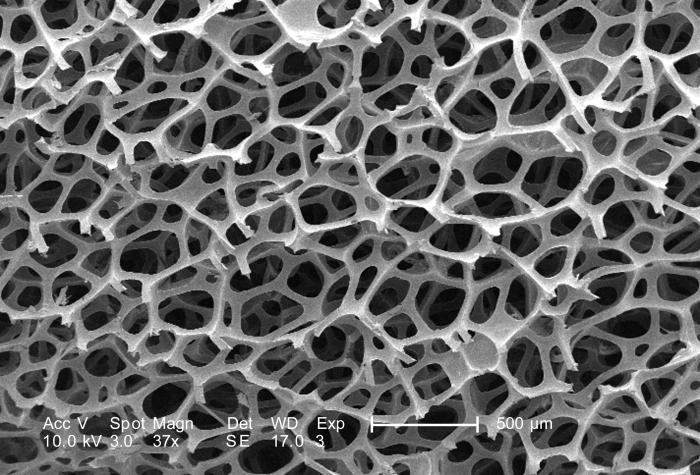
Under a low magnification of 37x, this 2007 scanning electron micrograph (SEM) depicted the fibrous configuration of a dry macrofoam sponge swab. This swab, as well as three other materials, including polyester (see PHIL 9735), rayon (see PHIL 9734), and cotton (see PHIL 9732, 9733) were scanned for a CDC study involving their efficiency in recovery of Bacillus anthracis bacterial spores from steel coupons that had been inoculated with a spore suspension of known concentration. See PHIL 9736, and 9738 for other views of this material. The article discussing the description of this swab material analysis, and the analytical results was published in 'Emerging Infectious Diseases', Vol. 10, No. 6, June, 2004, and was entitled, Swab Materials and Bacillus anthracis Spore Recovery from Nonporous Surfaces. A link to this article is found below.